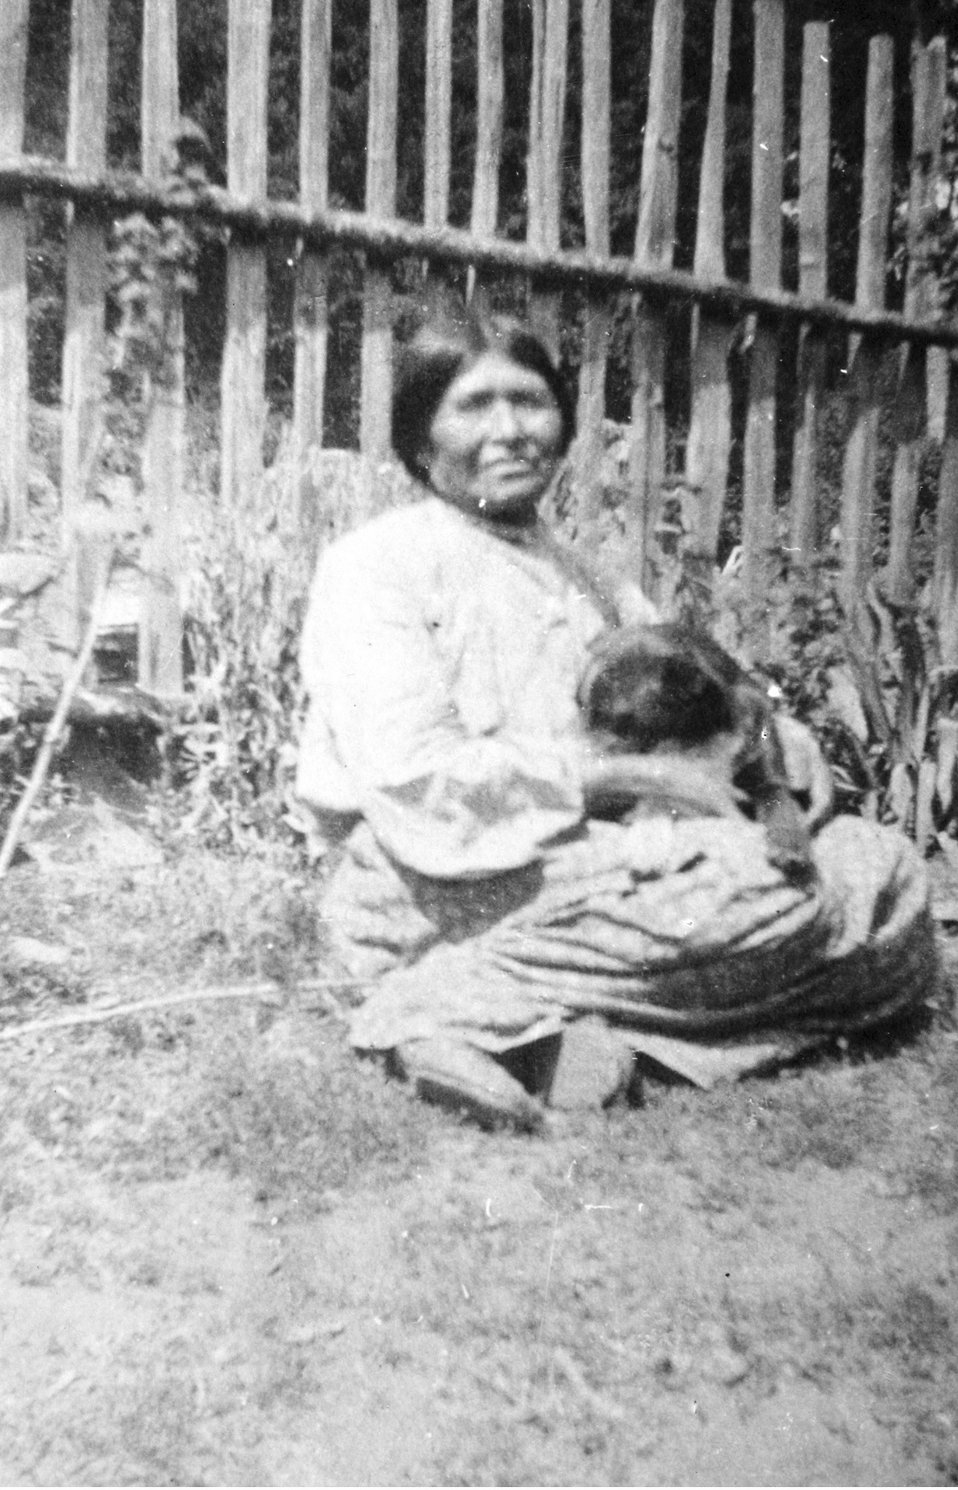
Adeline Billings C. 1895